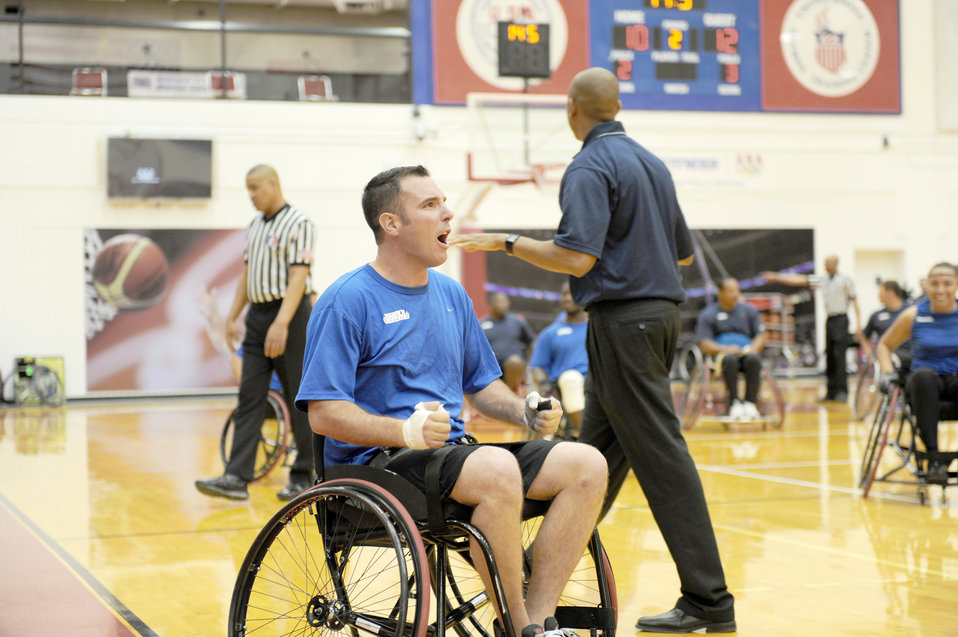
Team Air Force wins game

Christopher D'Angelo yells after making a point in a wheelchair basketball game during the Warrior Games bronze medal match against the Navy May 12, 2010, at the Olympic Training Center in Colorado Springs, Colo.